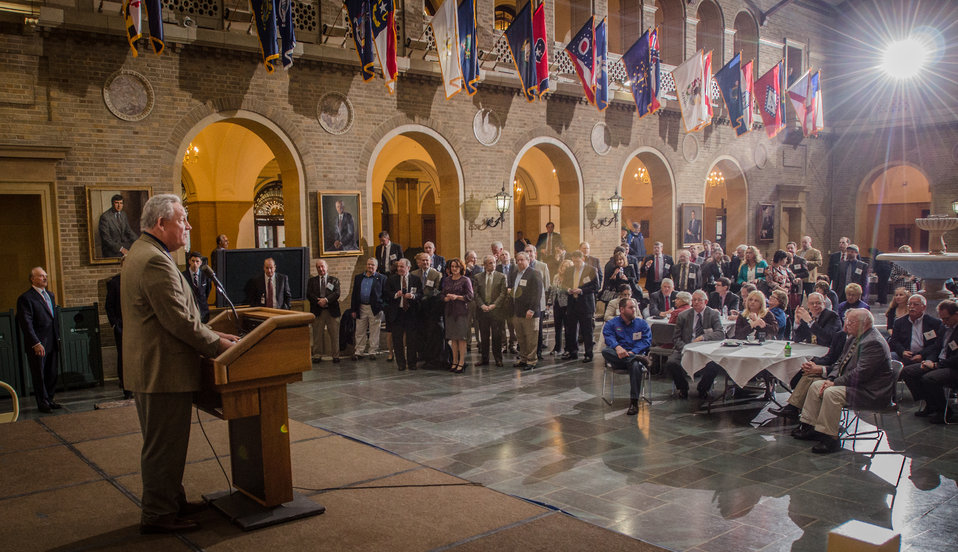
Dairy Management, Inc. Board Chair, Paul Rovey introduces Agriculture Secretary Tom Vilsack to dairy producers, Dairy Management, Inc., (DMI), during a luncheon at the Whitten Building Patio, in Washington, D.C. on Tuesday, Feb. 26, 2013. DMI Chief Executive Officer Tom Gallagher presented Secretary Vilsack and the U.S. Department of Agriculture (USDA) team with a National Football League Fuel Up to Play 60 helmet for the work that USDA has done in support of the dairy industry. The keynote speaker was former National Football League Pittsburgh Steelers halfback Robert Patrick 'Rocky' Bleier, left, who told of the importance of milk in his childhood growth, and recounted some of his historic game-winning football plays. Served at the luncheon were Smart Slice pizzas provided by Dominos who use 51% whole-wheat flour with reduced salt and fat toppings; and meet the current USDA school nutrition requirements. During the event Under Secretary for Food, Nutrition and Consumer Services Kevin Concannon mentions that The Good Cow Company milks (that retain it's freshness longer than standard milks) have been approved for purchase and use in schools.